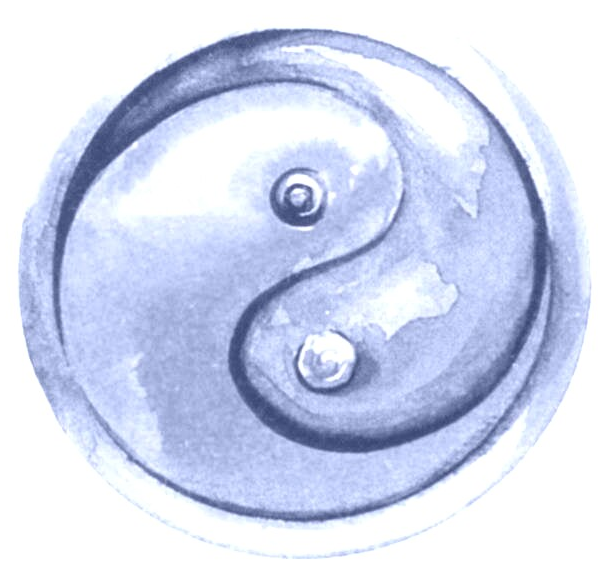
Yin and yang blue